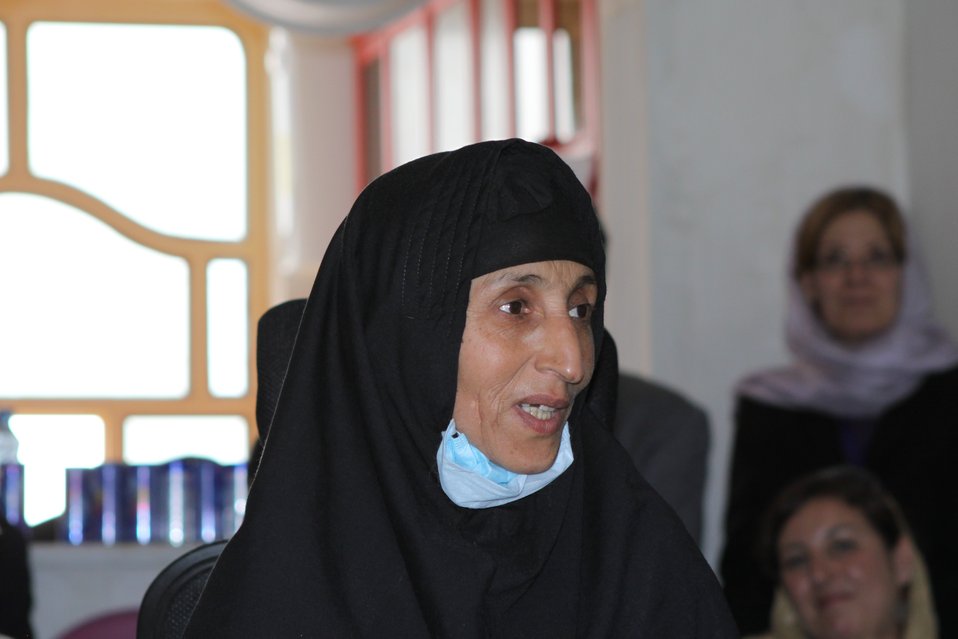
100525 Hirat Marble Conference 855